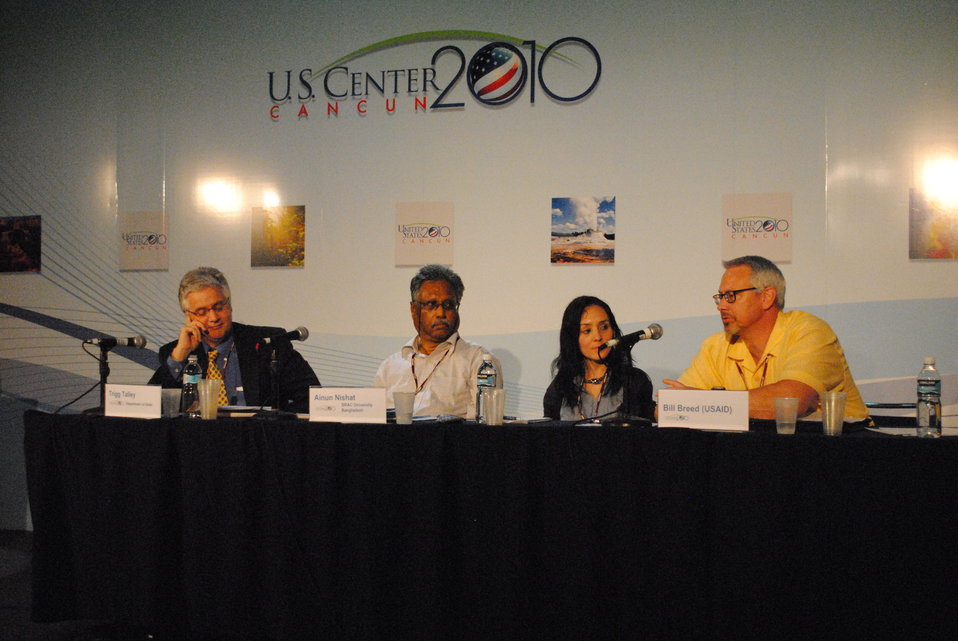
Panelists Respond to Questions

Panelists in the side event, Enhancing Capacity for Low Emission Development Strategies, respond to questions at the U.S. Center at COP-16 in Cancun, Mexico, on December 2, 2010.